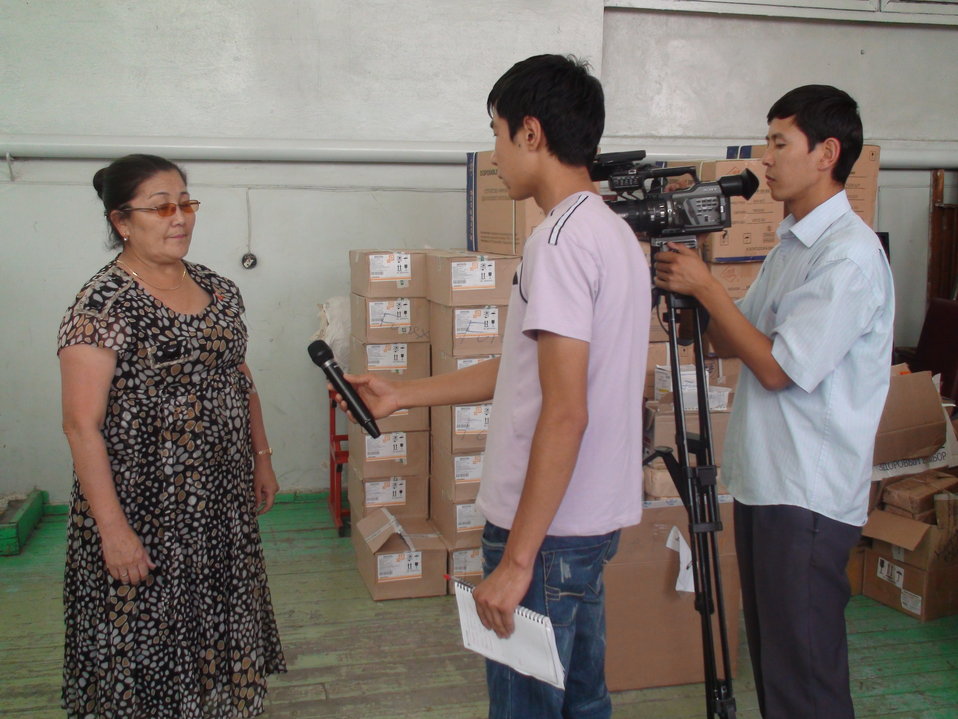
Valentina Akimova of the Kyrgyz Republic Ministry of Health Gives Interview

Valentina Akimova of the Kyrgyz Republic Ministry of Health gives an interview at the Osh Hospital in Kyrgyzstan on June 26, 2010.